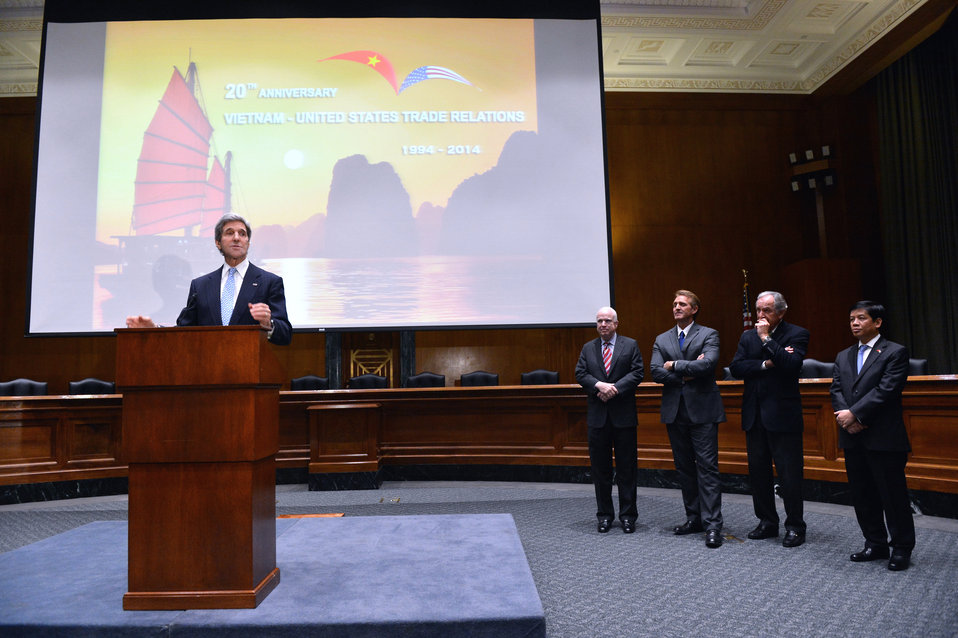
Secretary Kerry Attends a Reception in Honor of the 20th Anniversary of U.S.–Vietnam Trade Relations

U.S. Secretary of State John Kerry attends a reception in honor of the 20th Anniversary of U.S.–Vietnam Trade Relations in Washington, D.C., on February 10, 2014.